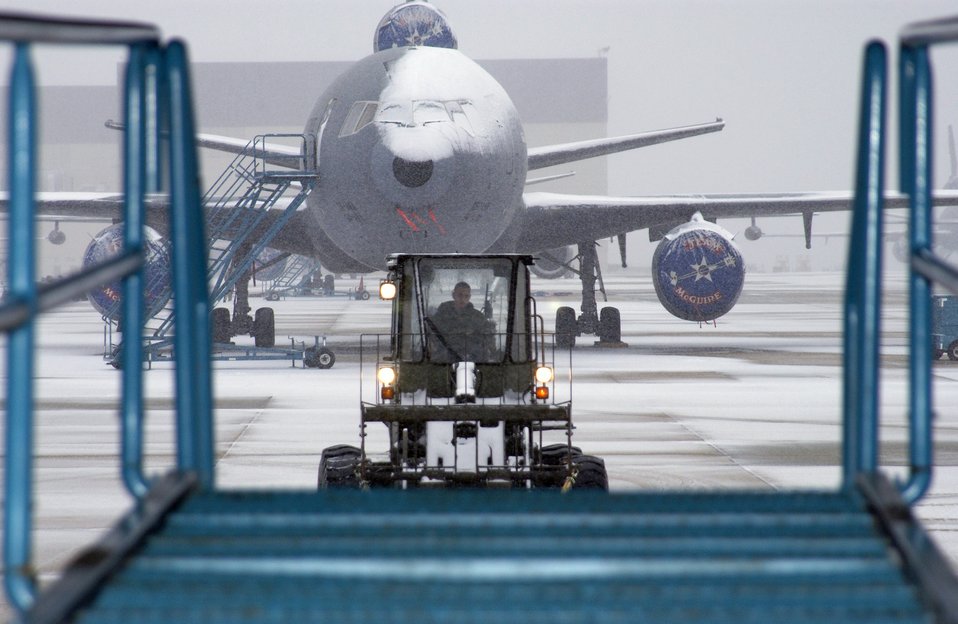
Loadmaster

MCGUIRE AIR FORCE BASE, N.J. -- An Airman with the 305th Aerial Port Squadron in front of a snow-covered KC-10 Extender here uses a front loader to unload a cargo aircraft here Feb. 24.